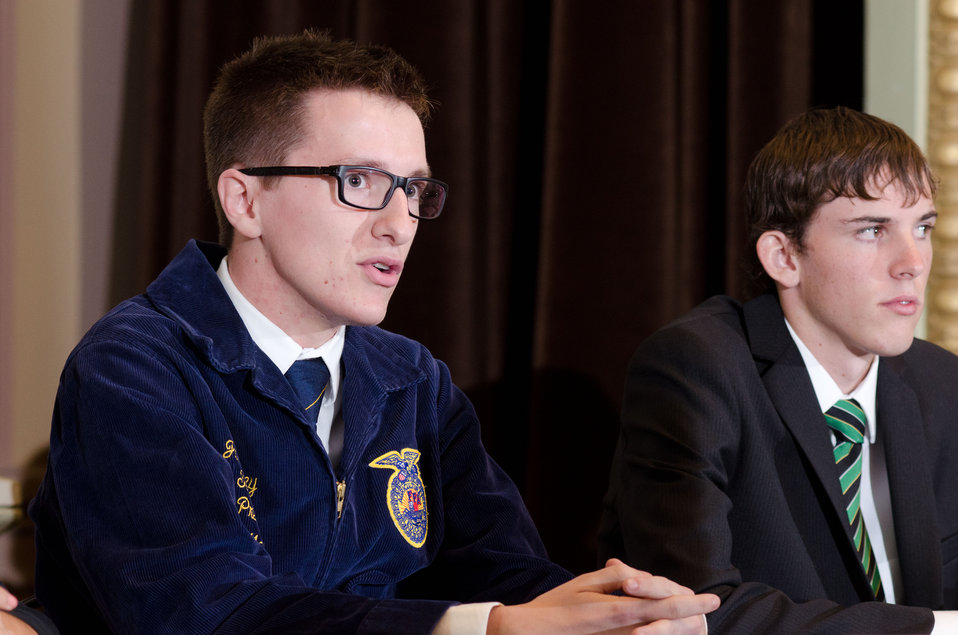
FFA Section 17 President and Youth Champions of Change panelist Jacob Dickey speaks during the Champions of Change Recognition event in the Indian Treaty Room of the Executive Office Building in Washington, D.C. on Tuesday, Oct. 9, 2012. The Champions of Change program was created to honor ordinary Americans doing great work in their communities. Each week, a different sector is highlighted and groups of Champions, ranging from educators, entrepreneurs and community leaders, are recognized for the work they are doing to serve and strengthen their communities.